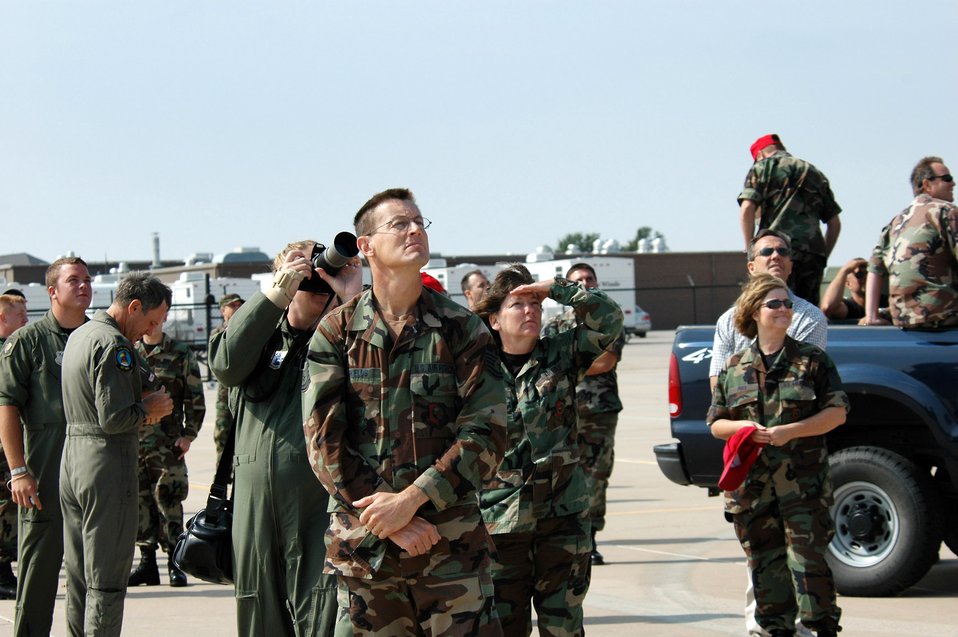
Kansas Jayhawks fly final sortie

Tech. Sgt. Mike Shields watches in the foreground with other Kansas Air National Guardsmen as the final Kansas ANG KC-135 sortie departs Sept. 9 from McConnell Air Force Base, Kan. Sergeant Shields is a member of the 184th Maintenance Squadron.